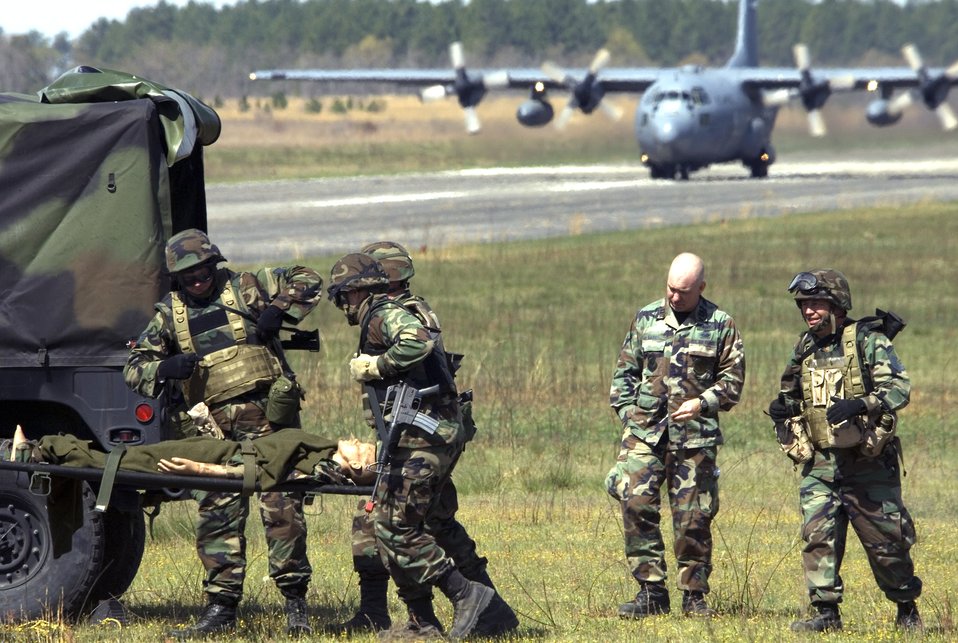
Airmen train for air evac

Medics with the 43rd Air Evacuation Squadron at Pope Air Force Base, N.C., prepare a patient for loading onto an arriving C-130 Hercules on Thursday, April 6, 2006. The 43rd is conducting annual medical field training to prepare squadron members for real world deployments.